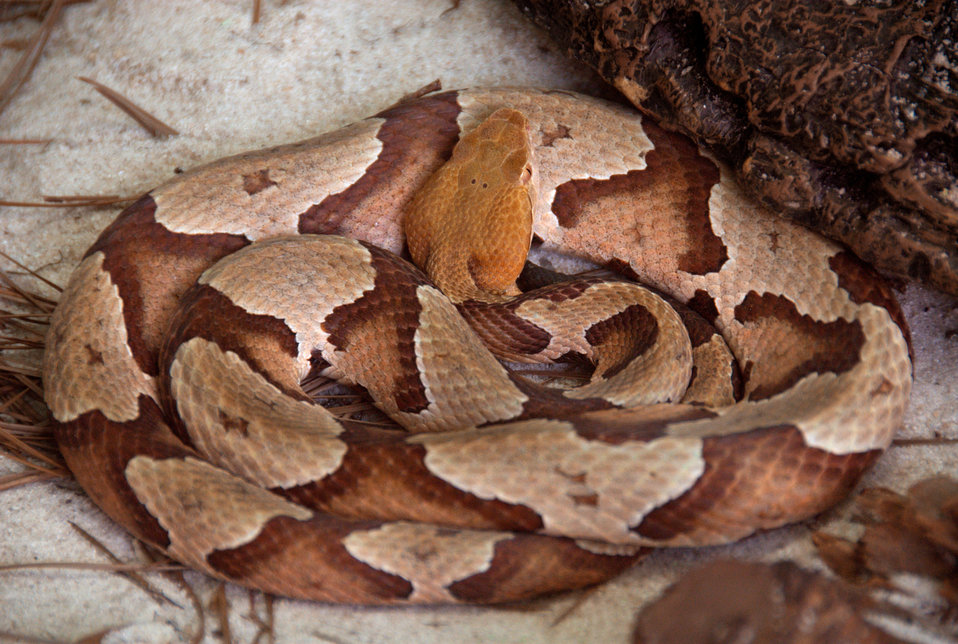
This 2008 photograph depicted an adult venomous 'Southern copperhead' snake, Agkistrodon contortrix, as it was coiled in its natural Costal South Carolina environment. The Southern copperhead grows to a length 50cm to 95cm. Please see PHIL 10842 through 10851, for images depicting a juvenile A. contortrix.